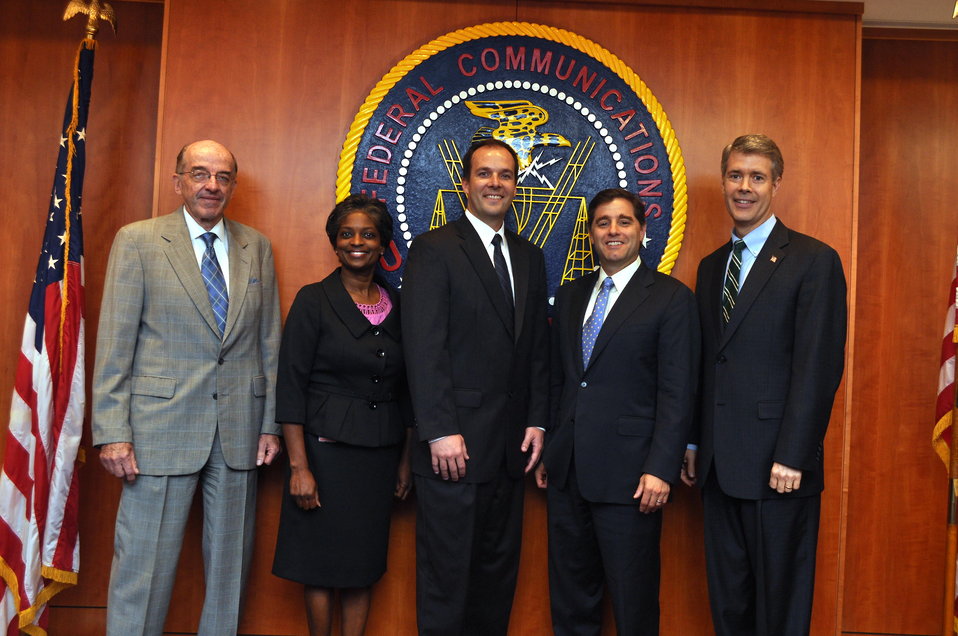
Engineers and Economists

At the August, 2011 Open Meeting the FCC recognized engineers and economists.